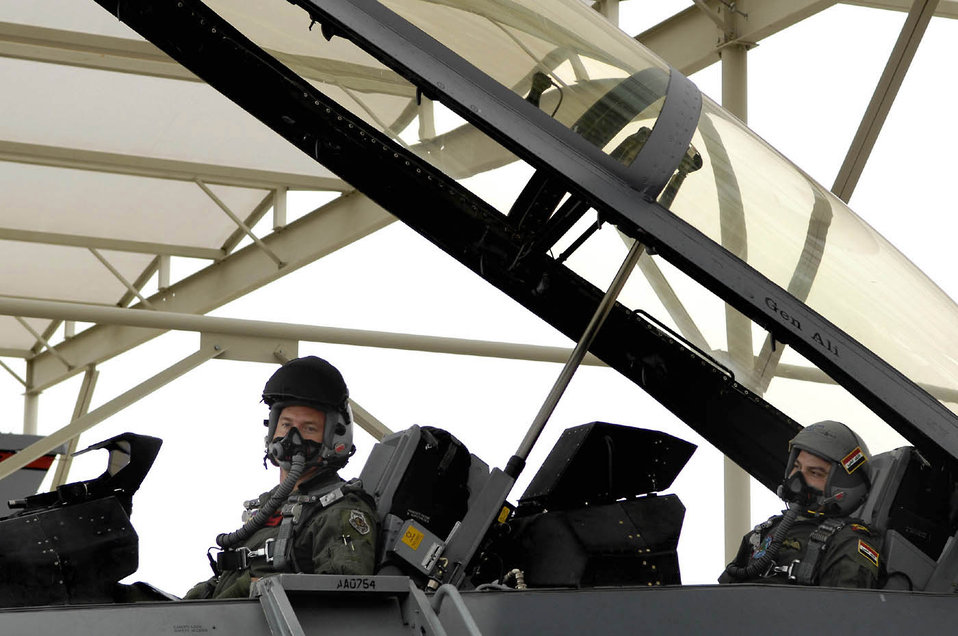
Iraqi general visits Luke, flies in F-16

Lt. Col. Jack Maixner and Iraqi air force Brig. Gen. Ali Al-Aaragy make final preparations before their flight together in an F-16 Fighting Falcon Dec. 15 at Luke Air Force Base, Ariz. Colonel Maixner is the 63rd Fighter Squadron commander.